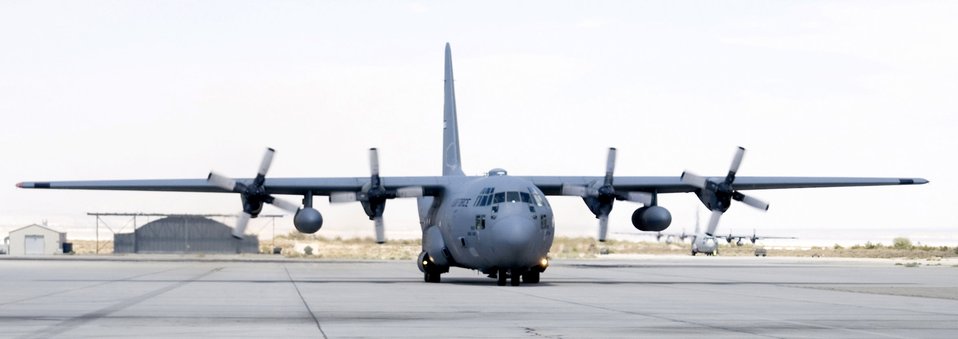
Air Force, Boeing officials upgrade C-130 cockpits

A C-130 Hercules taxies on the runway after performing communication, navigation, radar and air data testing as part of the Avionics Modernization Program June 16 at Edwards Air Force Base, Calif. The Avionics Modernization Program upgrade includes replacement of 1960s-era instruments with a modernized glass cockpit. Developmental testing of the C-130 Avionics Modernization Program is scheduled to end in September 2009.